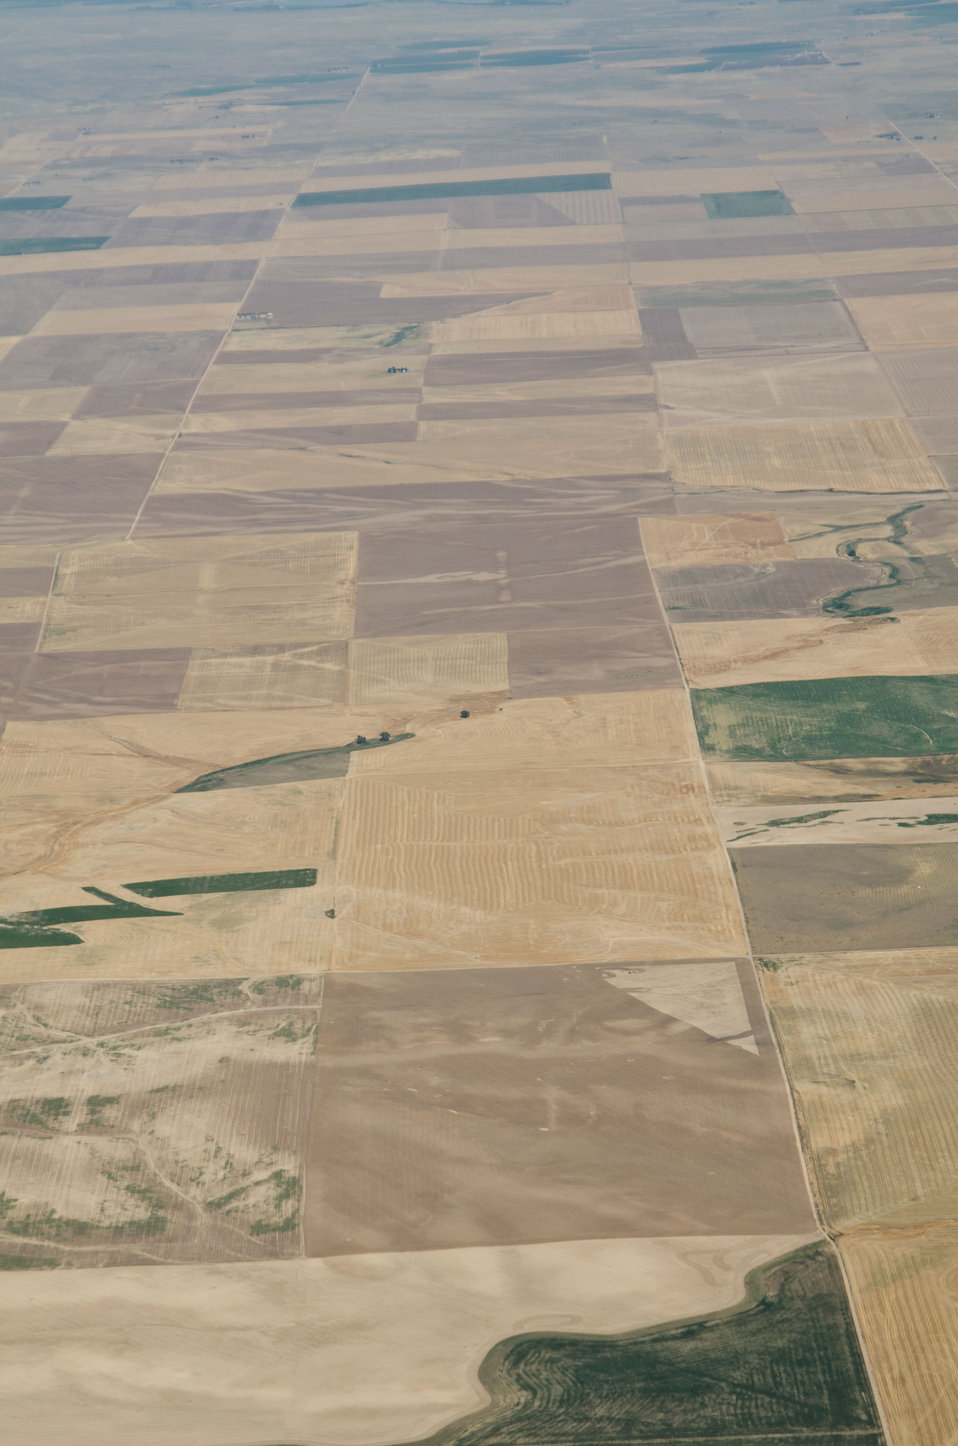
Aerial views of drought affected Colorado dryland crops near Byers, Colorado, on Saturday, July 21, 2012. Green areas are irrigated.